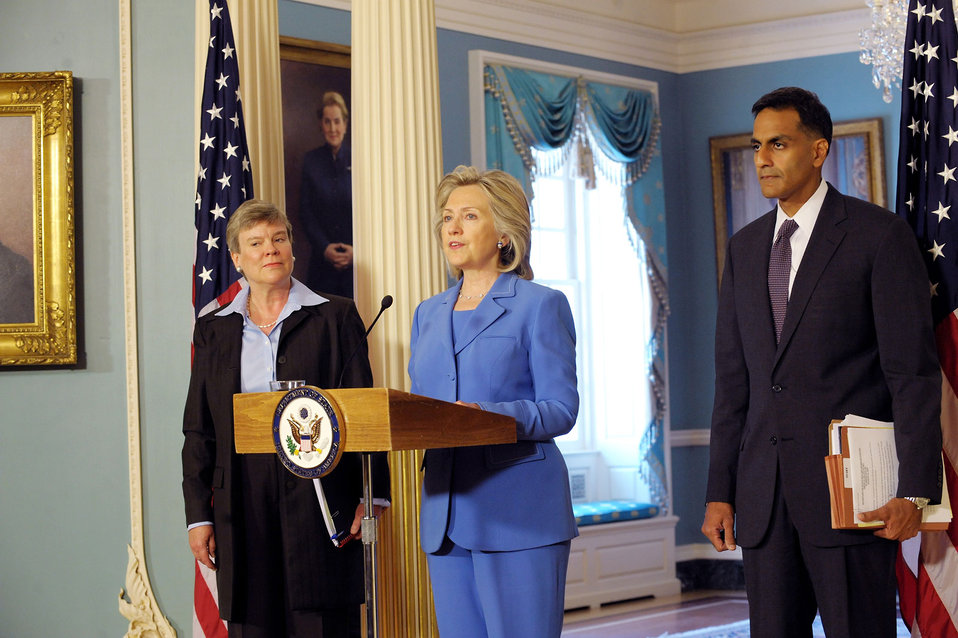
Secretary Clinton With Assistant Secretary Gottemoeller and Assistant Secretary Verma Delivers Remarks on the Ratification of the New START Treaty

U.S. Secretary of State Hillary Rodham Clinton, along with Assistant Secretary for Verification, Compliance, and Implementation Rose Gottemoeller (left) and Assistant Secretary for Legislative Affairs Richard Verma (right), delivers remarks on the ratification of the new START treaty in the Treaty Room at the U.S. Department of State in Washington, D.C., on August 11, 2010.